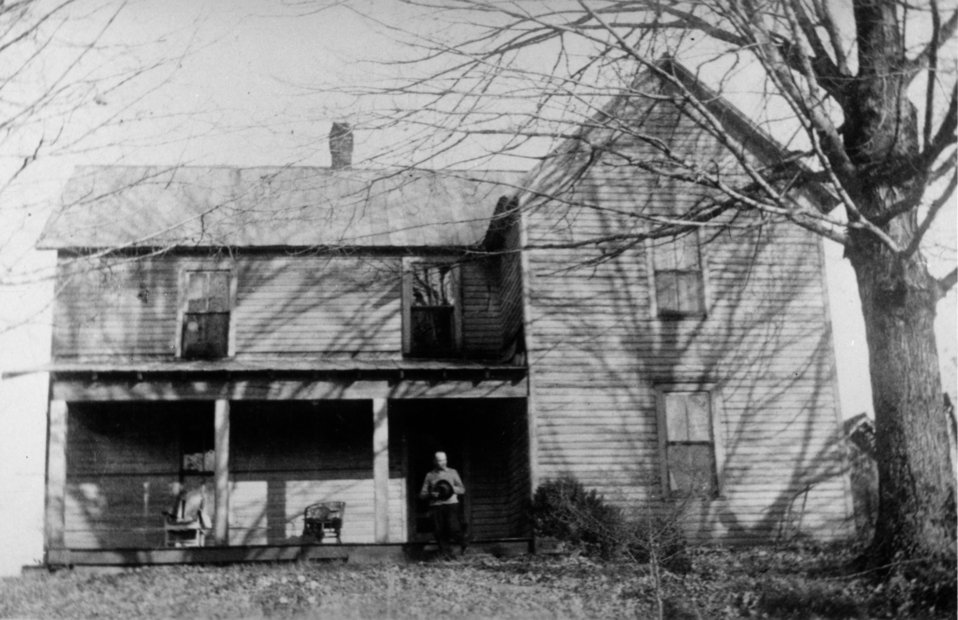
Early settlers at Oak Ridge